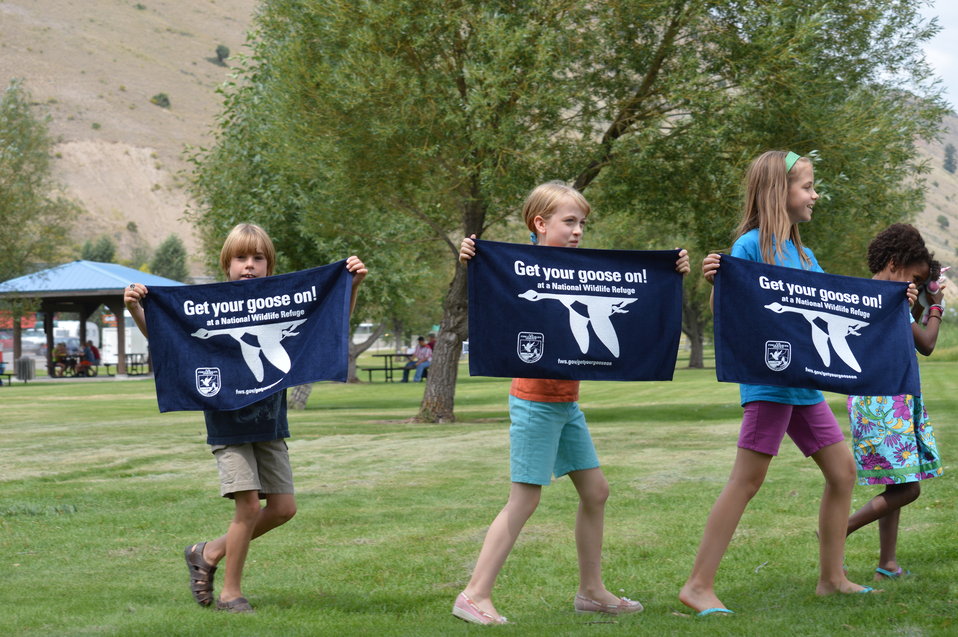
Get Your Goose On! - National Elk Refuge Style

On August 10, 2012 the U.S. Fish and Wildlife Service and Partners celebrated the 100 year anniversary of the establishment of the National Elk Refuge. In these photos, young attendees, along with Puddles the Blue Goose and the National Elk Refuge's mascot, showed us how to Get Your Goose On! with style.